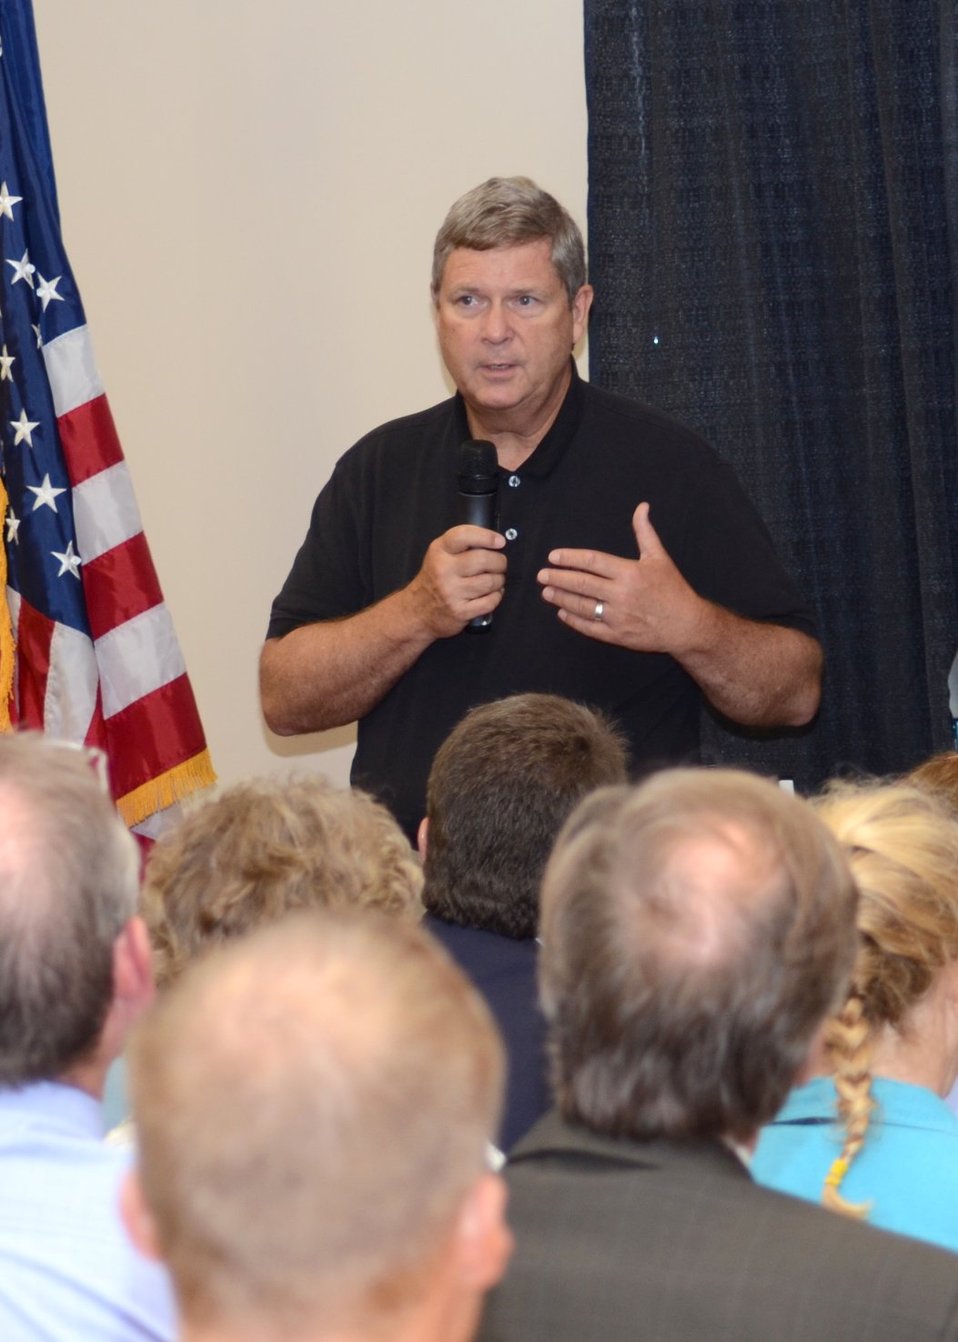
Agriculture Secretary Tom Vilsack speaks at the White House Rural Forum at the Wisconsin State Fair, in West Allis, WI, on Thursday, August 4, 2011, to businesses and community leaders, farmers and ranchers to explore ways federal, state and local officials can work together to improve economic conditions and create jobs. The forum is part of a series of White House Rural Roundtables that are being held across the country this summer with senior Administration officials.